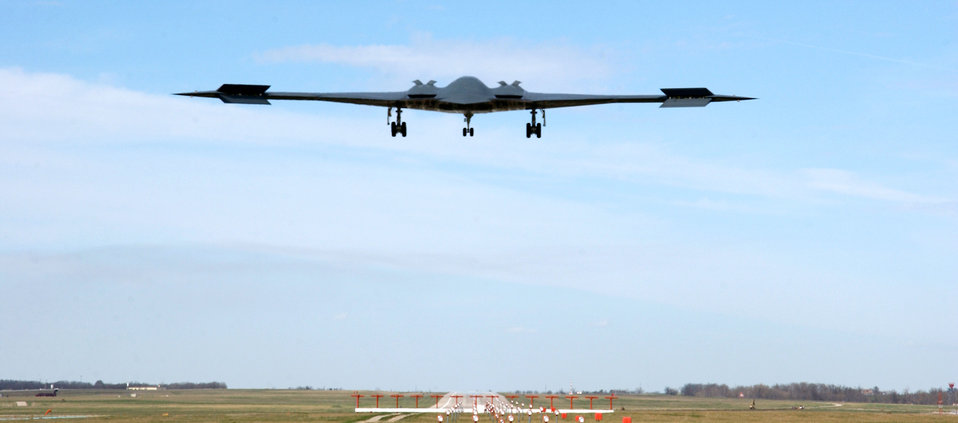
B-2 returns from Iraq mission

The